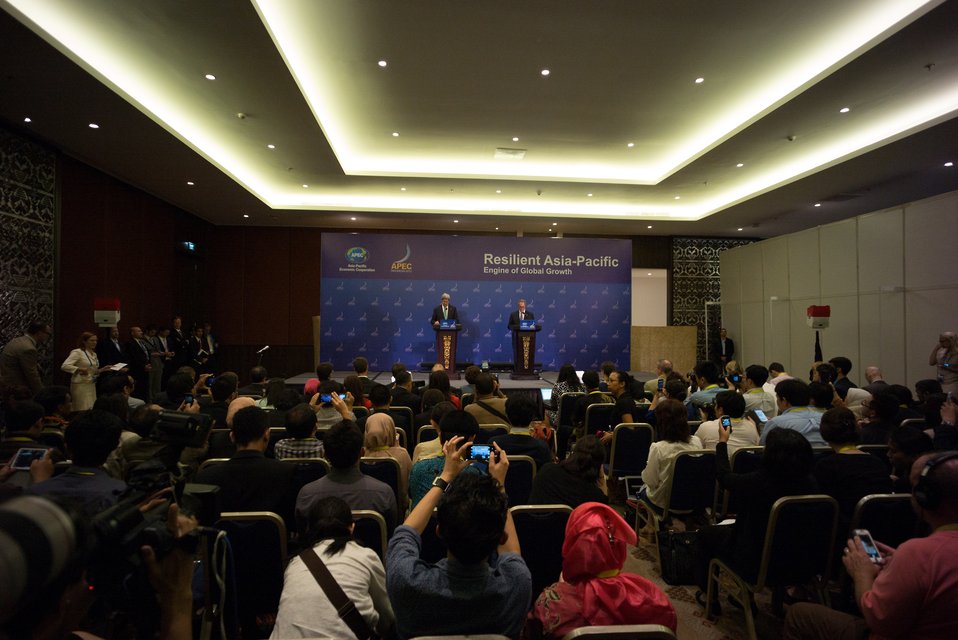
Secretary Kerry and Ambassador Froman Speak to the Press at the APEC Ministerial in Indonesia

U.S. Secretary of State John Kerry and U.S. Trade Representative Ambassador Michael Froman speak with reporters during a news conference after the APEC Ministerial meetings in Bali, Indonesia, on October 5, 2013.